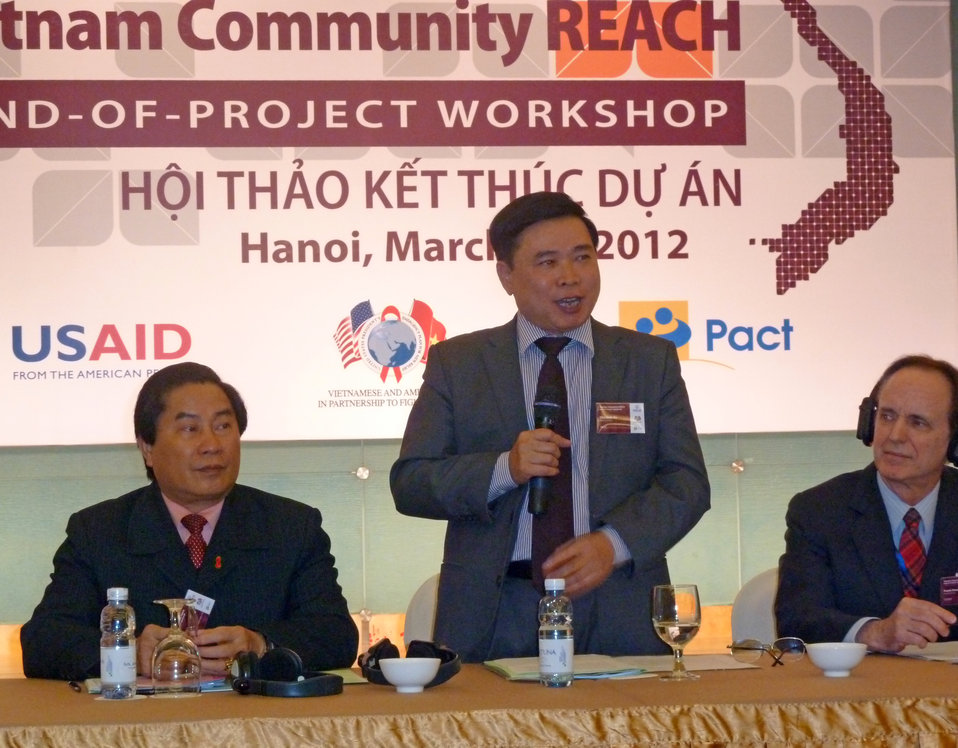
Dr. Chu Quoc An, Deputy Director, Vietnam Administration of AIDS Control, addresses participants at the Community REACH project workshop

Community REACH project close-out with USAID and implementing partner, Pact